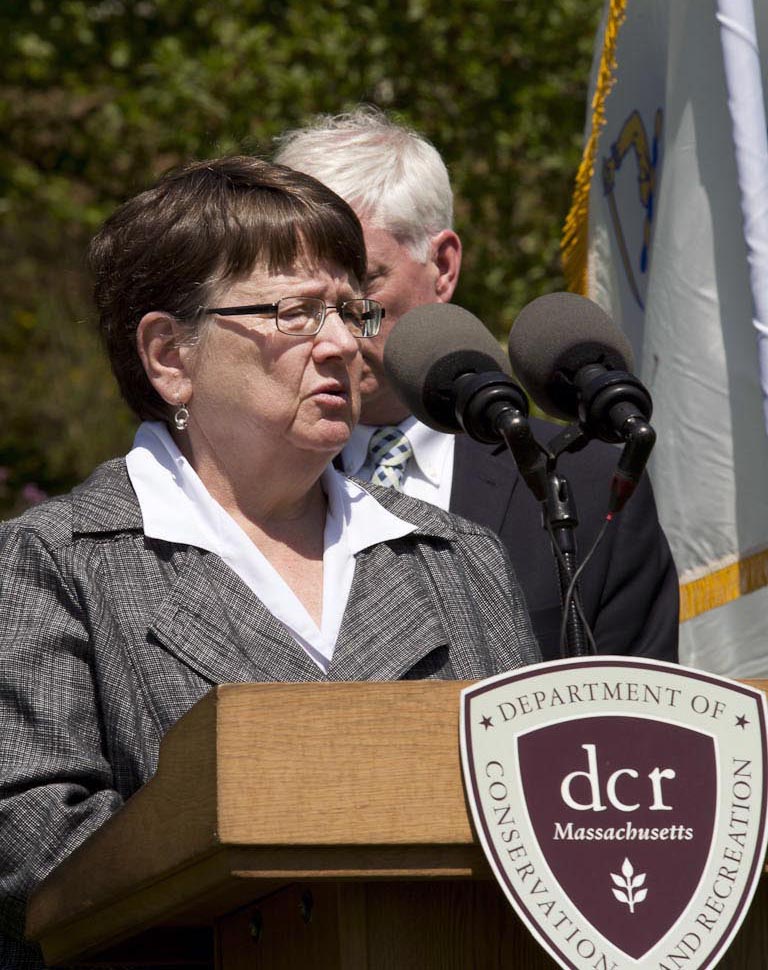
Congresswoman (MA) Elizabeth Malia speaks at the declaration event for the eradication of Asian Longhorned Beetle (ALB) in Boston, MA on May 12, 2014. Federal, state and local officials joined together to announce that ALB has been eradicated from the Boston regulated area. Boston joins five other areas to declared eradication of ALB in the U.S.